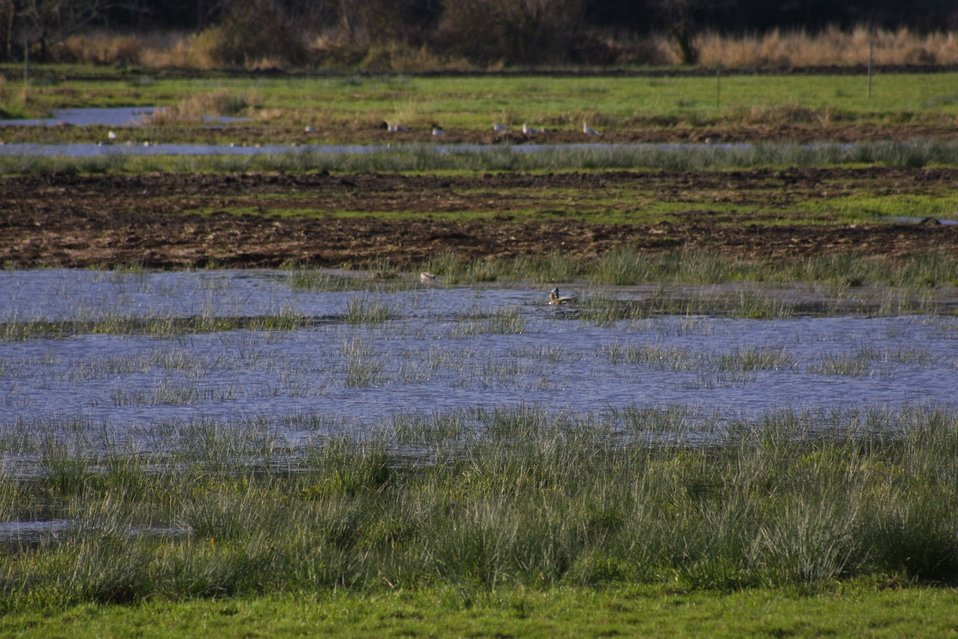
Wetlands at the Dean Creek Watchalbe Wildlife site near Reedsport, Oregon.